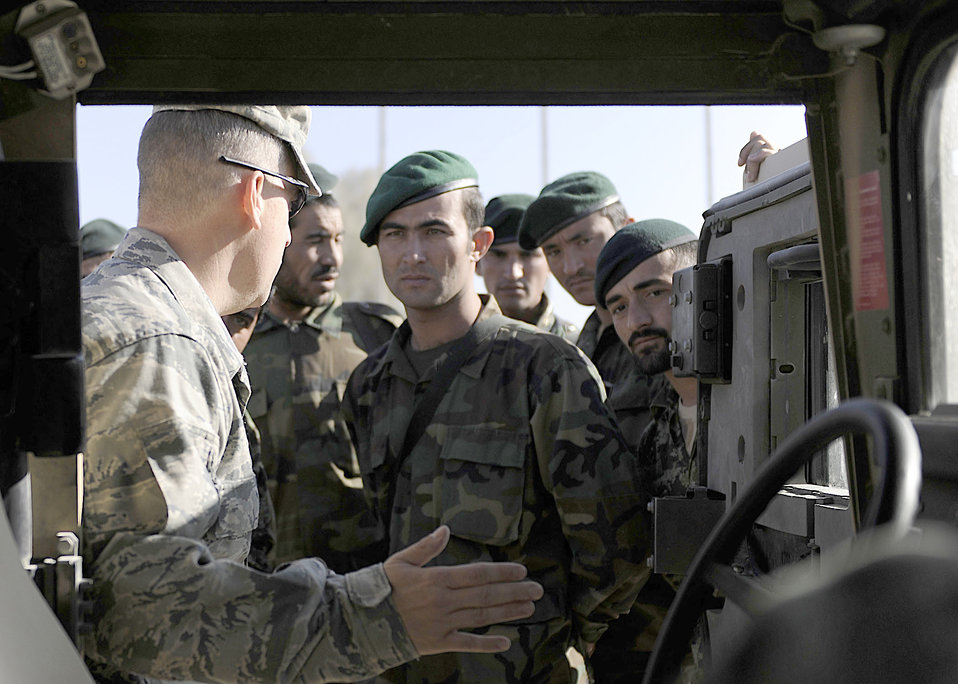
Afghan air force

Tech. Sgt. Michael Smith instructs a group of Afghan air force members during a training session Nov. 7, 2010, at Kandahar Airfield, Afghanistan. The AAF members belong to the Kandahar Air Wing Security Kandak and are training to become an elite quick-response force. Sergeant Smith is a member of the 443rd Air Expeditionary Advisory Squadron/NATO Training Mission - Afghanistan.